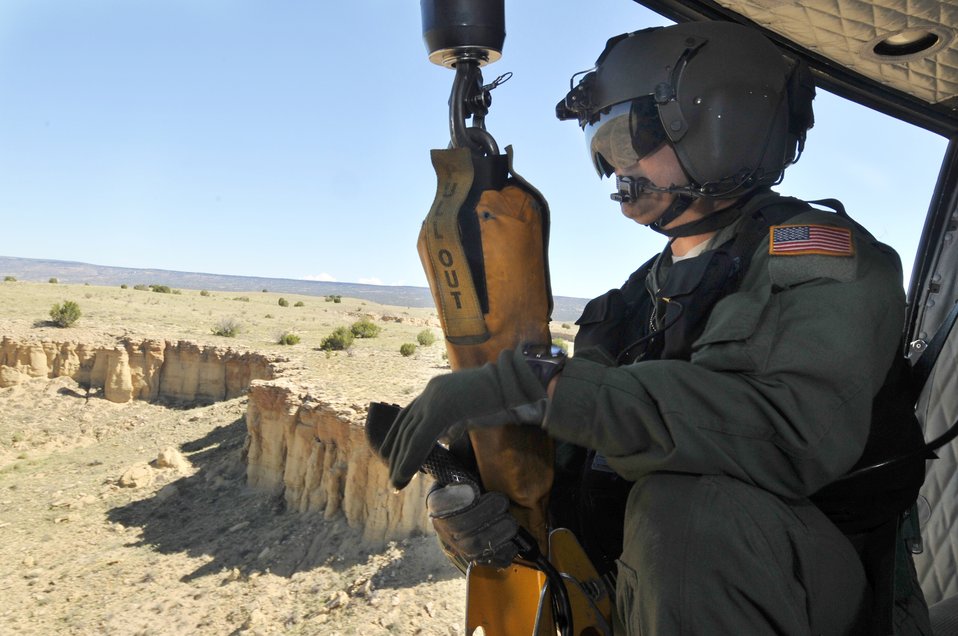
It's hot in here

Tech. Sgt. Steven